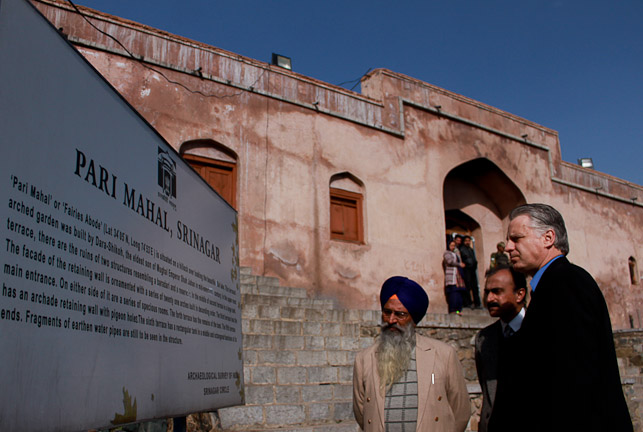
Ambassador Roemer Visits Jammu and Kashmir

U.S. Ambassador to India Timothy J. Roemer visits Jammu and Kashmir, March 17-18, 2011, to engage and listen to the people and connect with the youth of the state.